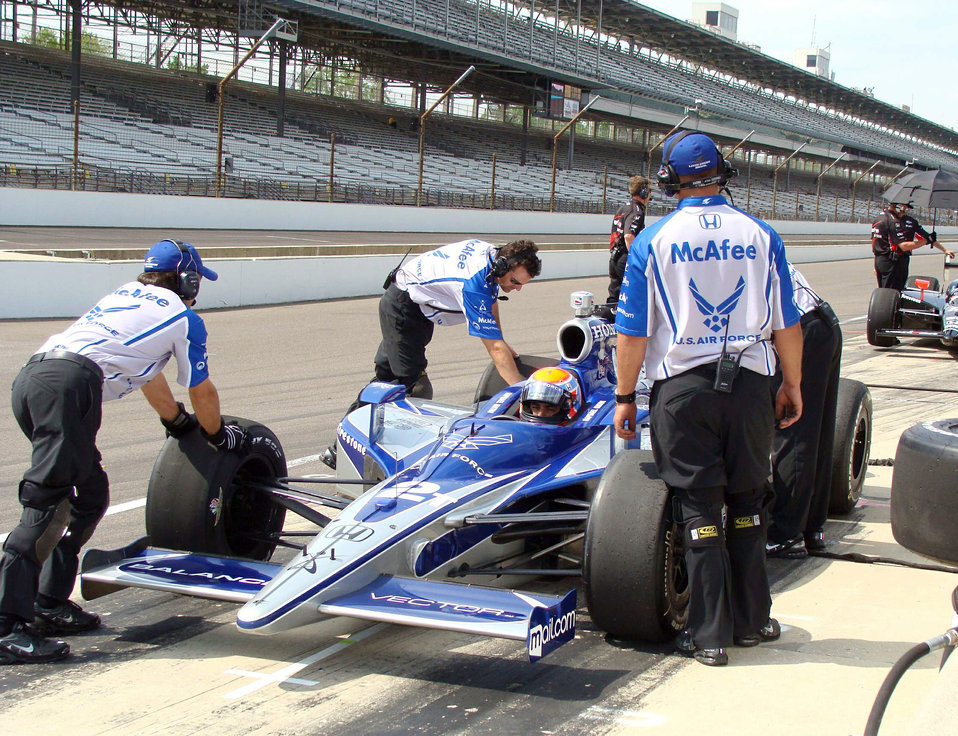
Air Force makes Indy 500 debut

The Luczo Dragon Racing team completes a pit stop during practice by No. 2 car driver Rafael Matos May 16 at the Indianapolis Motor Speedway. Matos is driving the Air Force-themed Indy car in the Indianapolis 500 May 24 after qualifying 12th with the fastest time of five rookies in the field.